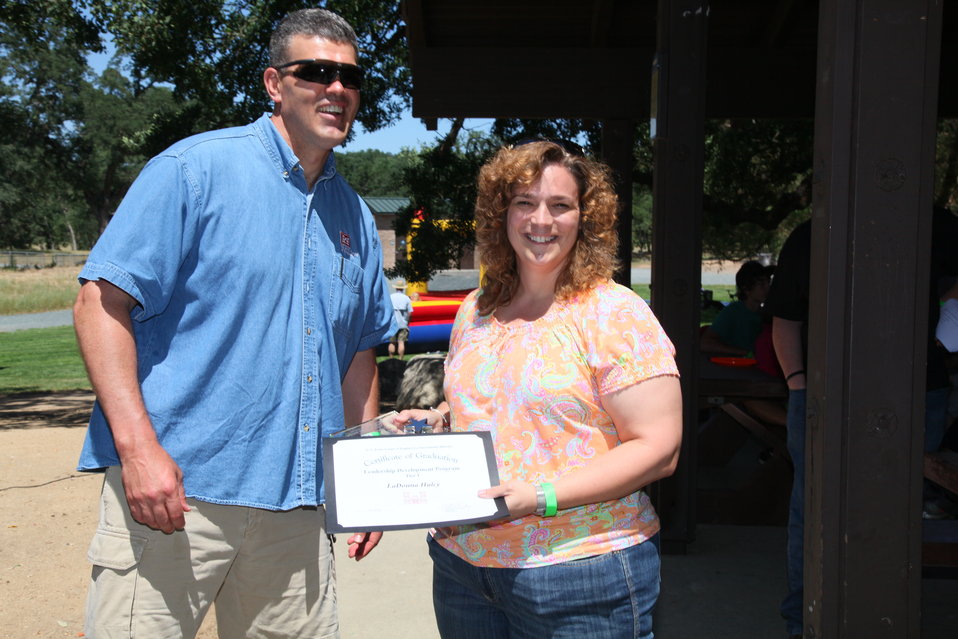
2011 Annual Picnic